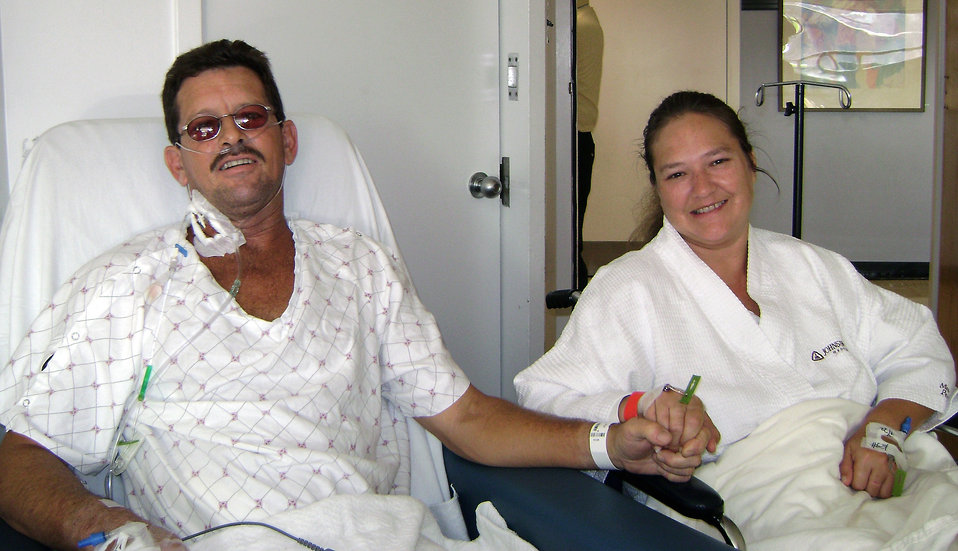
Dover Airman donates kidney to fiance

Master Sgt. Laura Perry donated her kidney to her fiance and fellow squadron member, Staff Sgt. Mark Shortt, Sept. 22 at John Hopkins Hospital in Baltimore. In August 2007, Sergeant Shortt was diagnosed with acute renal failure, meaning his kidneys lost the ability to filter waste products from the blood and regulate the body's fluid balance. Sergeant Perry is an air Reserve technician with the Air Force Reserve's 512th Civil Engineer Squadron at Dover Air Force Base, Del.